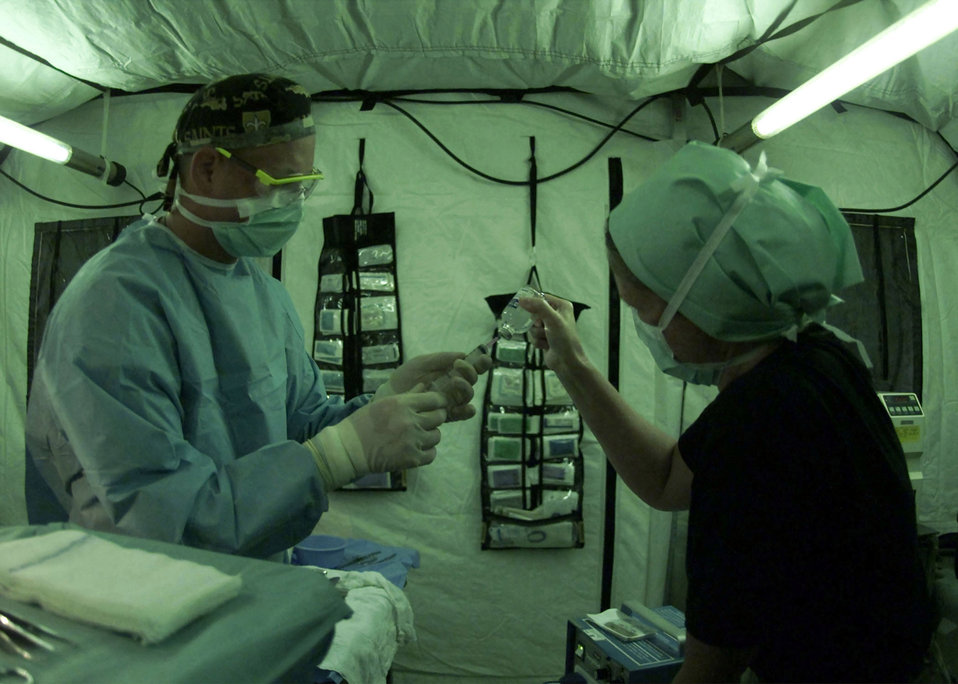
Keloid excision

OPERATION ENDURING FREEDOM -– Capt. Cynthia Warwick (right) and Staff Sgt. Chad Smith, both from the 81st Medical Surgical Squadron at Keesler Air Force Base, Miss., prepare a syringe with local anesthesia. Warwick, a nurse, and Smith, a surgical technician, deployed with the 28th Medical Group are preparing to assist in a Keloid excision in support of Operation Enduring Freedom.